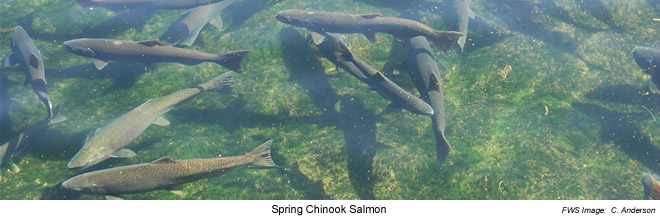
Spring Chinook Salmon in Hatchery Pools

A pool of Spring Chinook Salmon in a Carson National Fish Hatchery rearing pool.